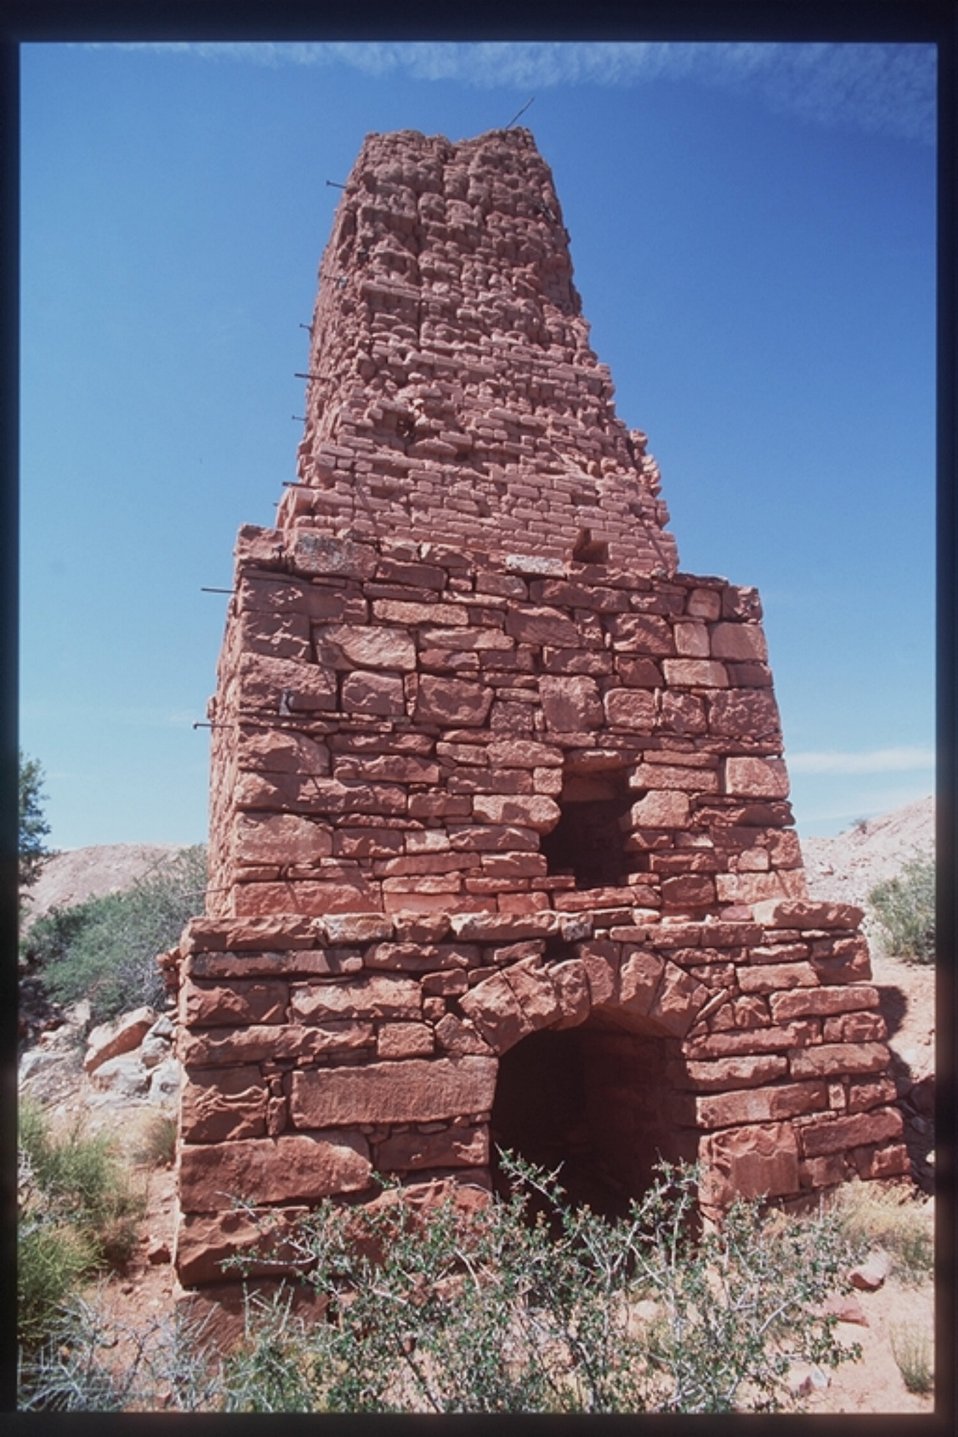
The Grand Canyon-Parashant National Monument was designated by President Clinton in January 2000. The monuments remote open, undeveloped area and engaging scenery is located on the edge of the Grand Canyon.